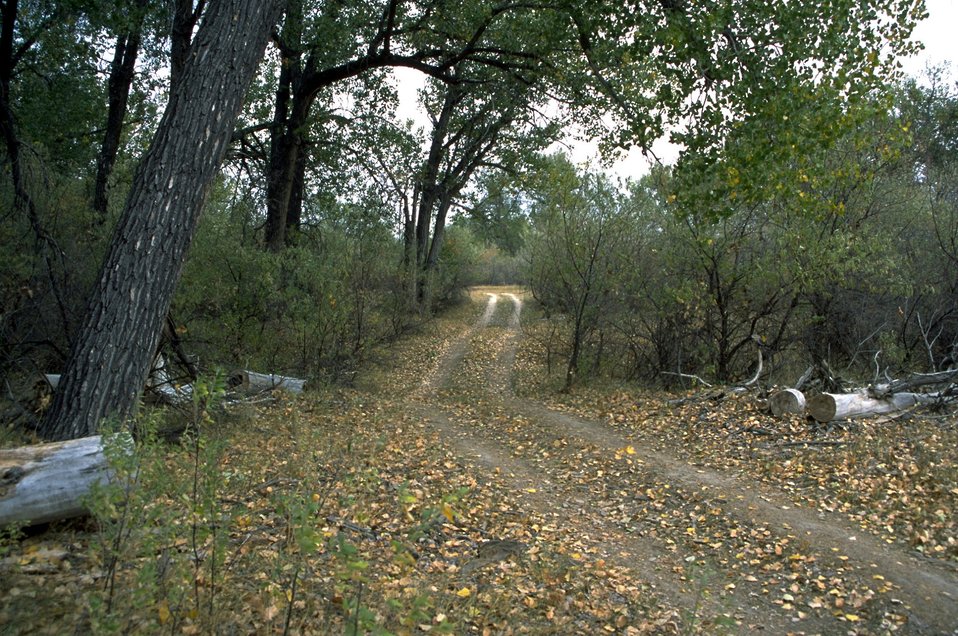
Road into Howrey Island Recreation Area